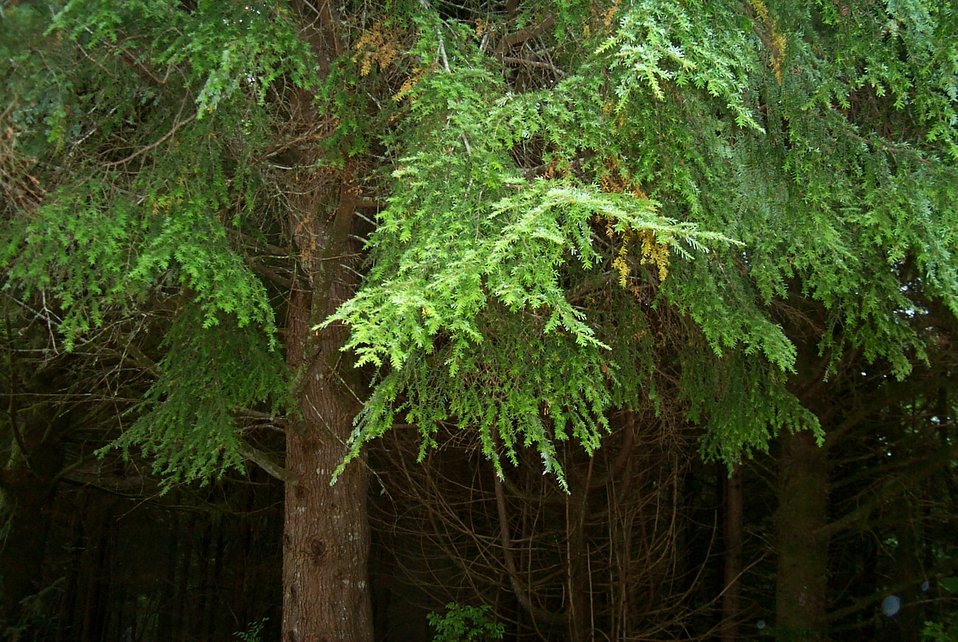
Oregon coast foliage at Fort Clatsop National Memorial.